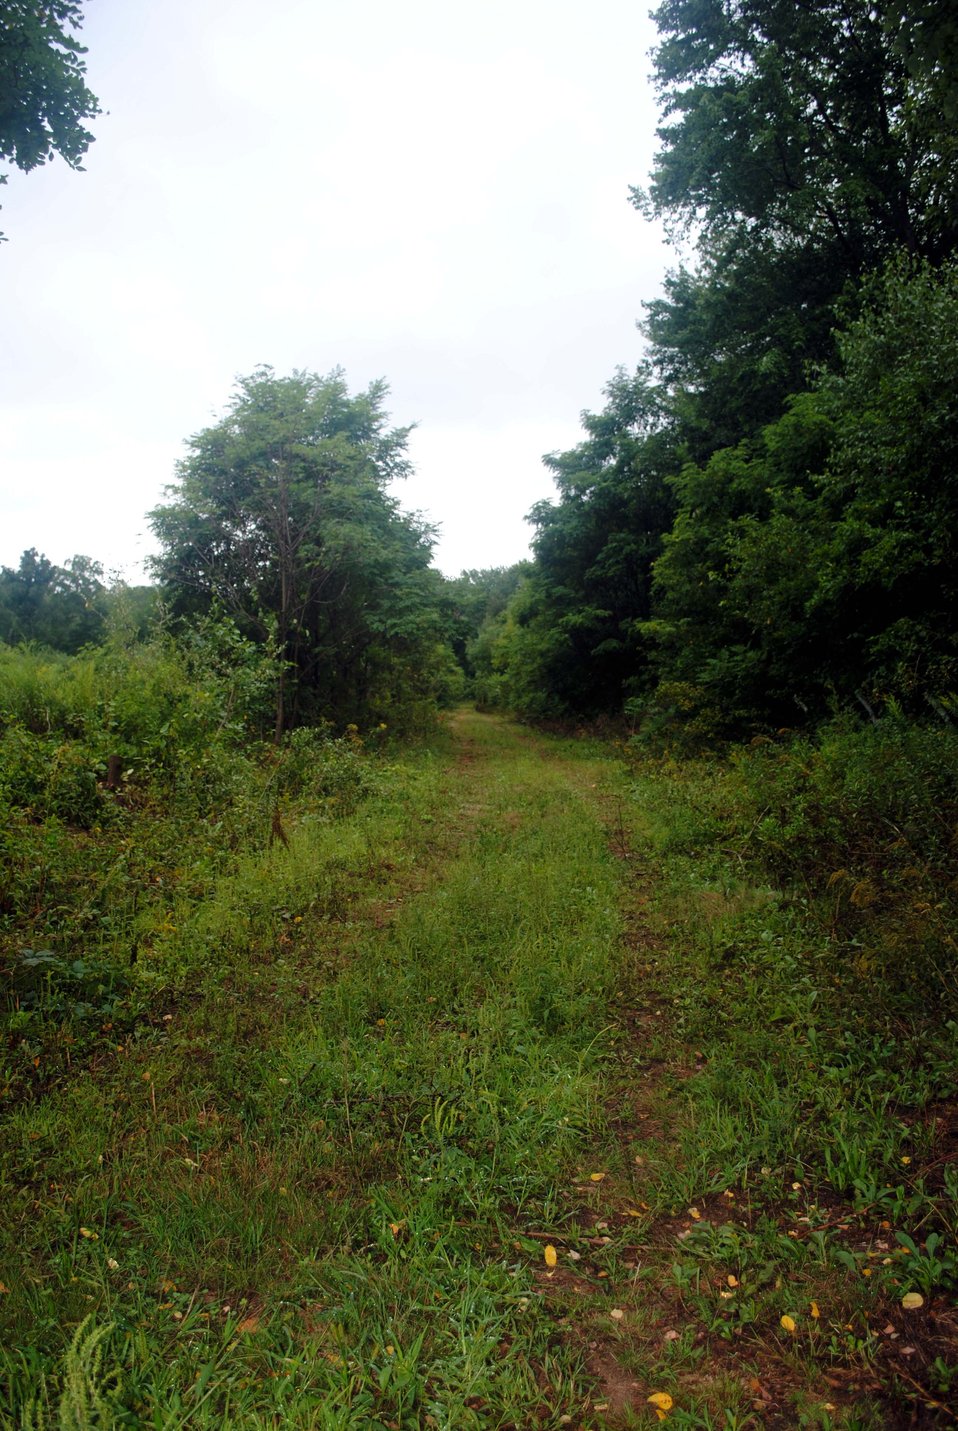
Abandoned Race Track

An abandoned horse racing track at the Fort River Division of the Silvio O. Conte National Wildlife Refuge, Hadley, MA.